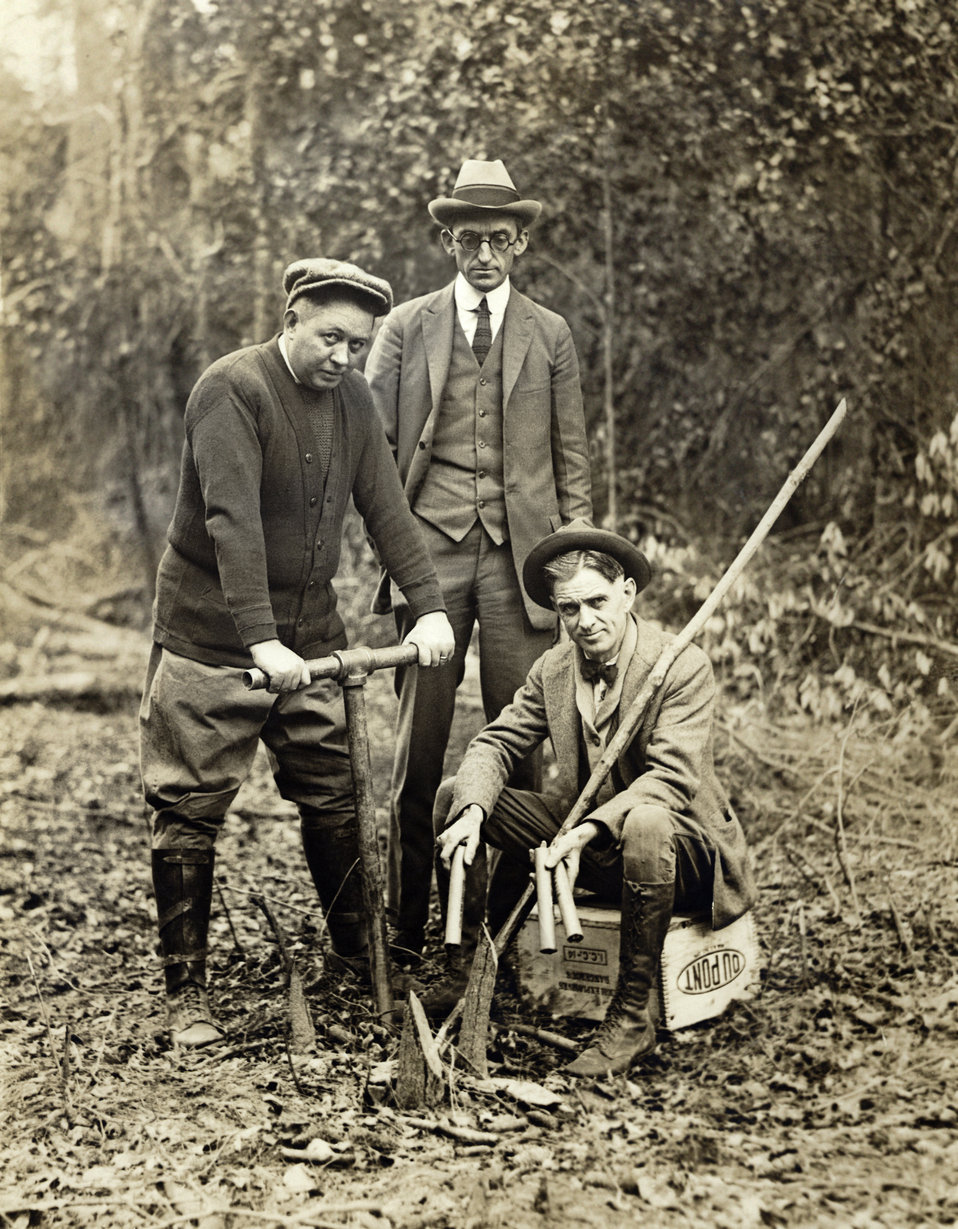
This 1920s photograph showed three malaria control health workers in the process of using dynamite to remove tree stumps somewhere in Virginia, in order to create a proper drainage ditch, which would act to drain a collection of standing water. Note that the seated man is holding three sticks of dynamite.